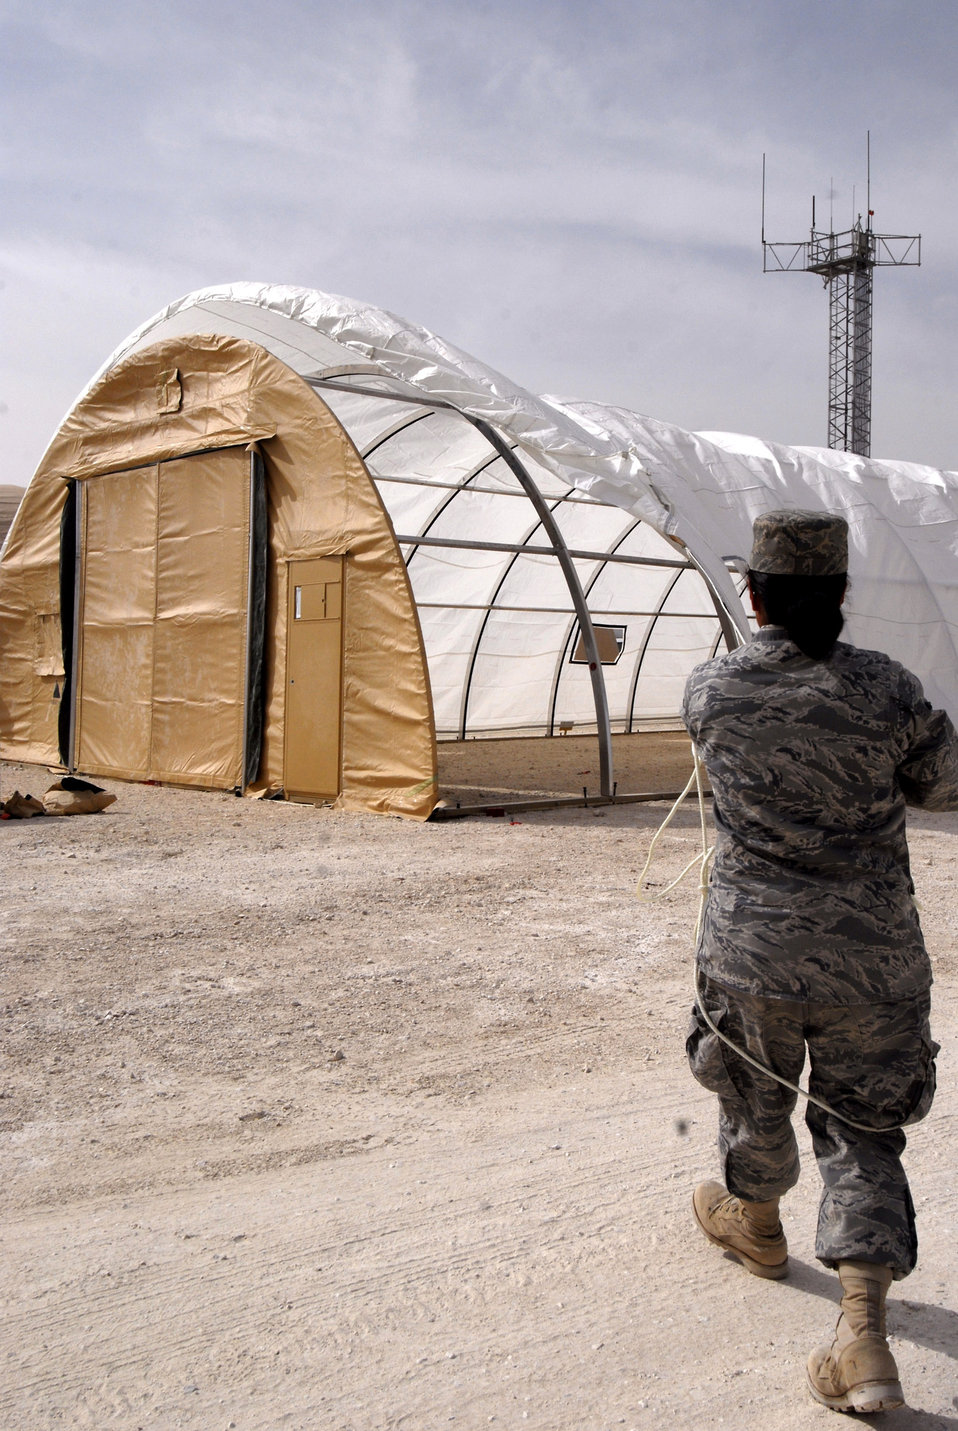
Raising the roof

Airman 1st Class Ingrid Tamayo keeps tension on the skin going over the arches of a California Medium Shelter System Feb. 17 used to house Airmen at an air base in Southwest Asia. Airman Tamayo is a structural apprentice with the 379th Expeditionary Civil Engineer Squadron. She is from Los Angeles, Calif., and is deployed from Travis Air Force Base, Calif.